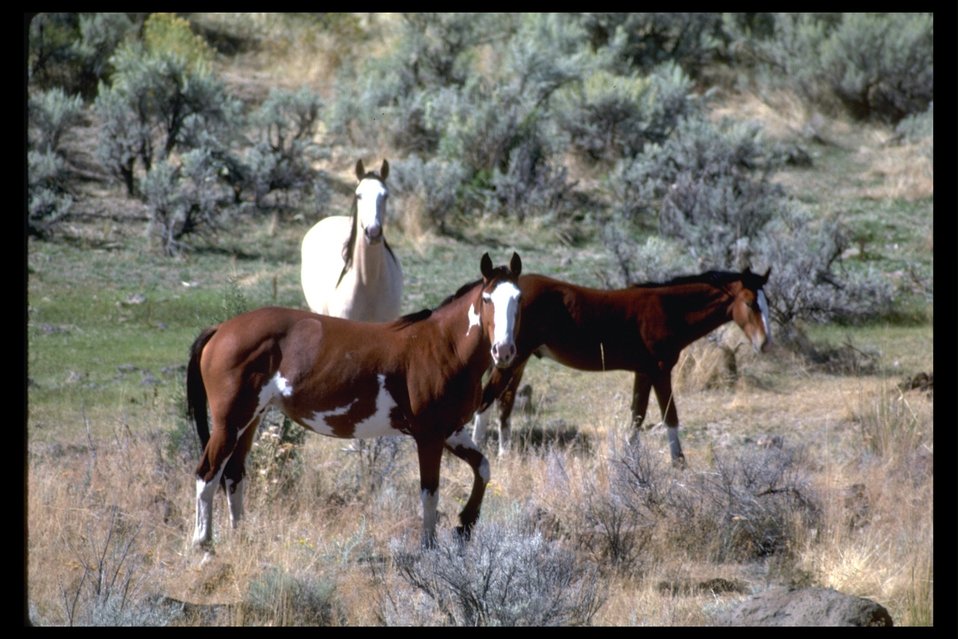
Wild horses in the South Steens HMA.